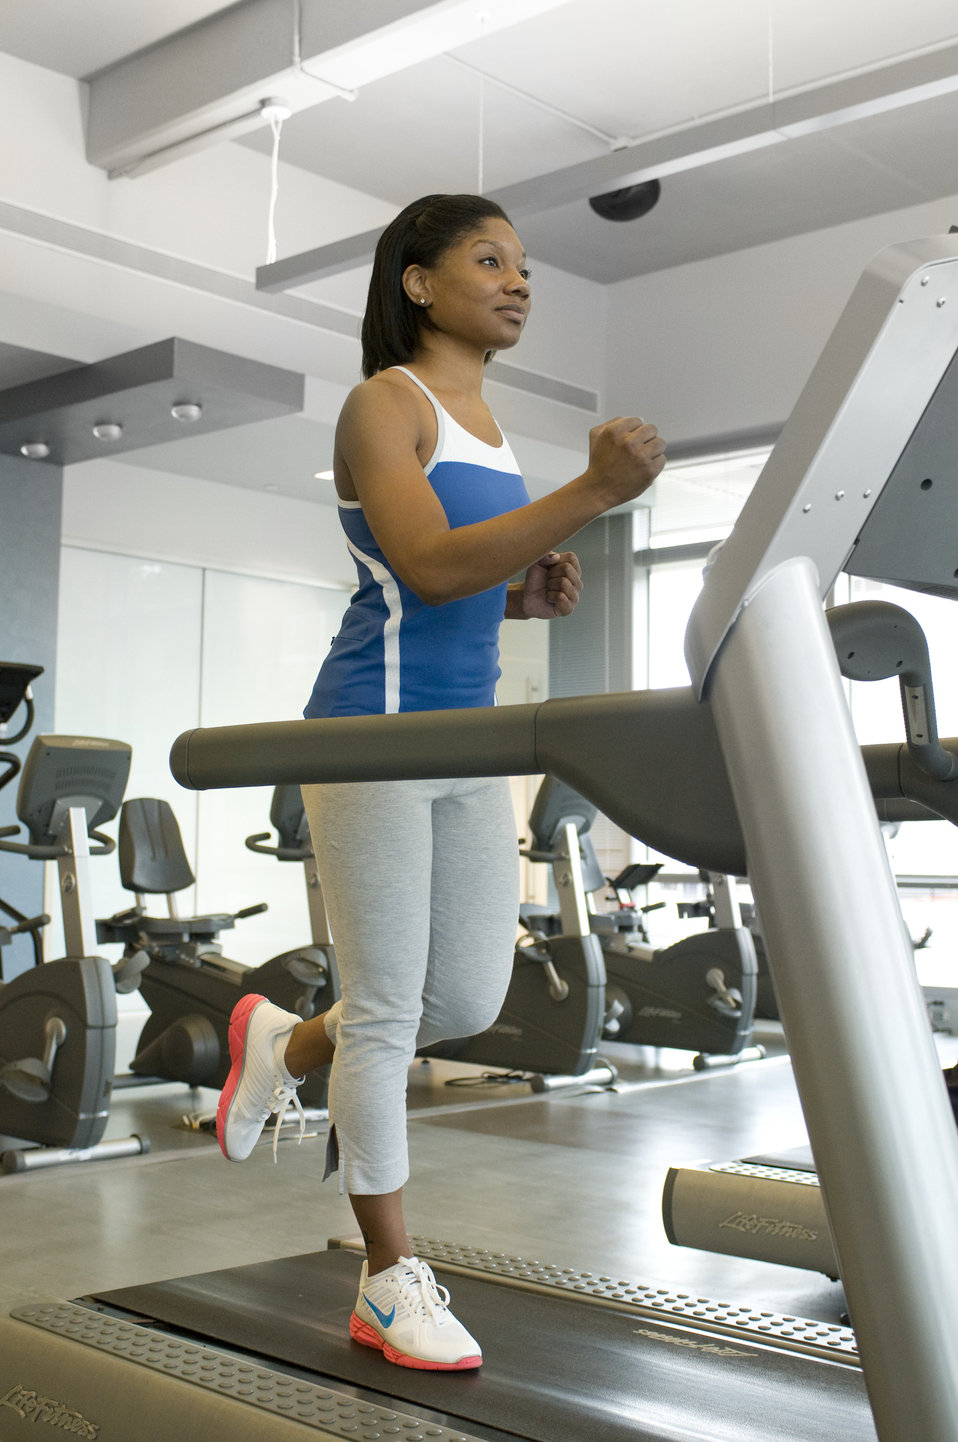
This image was captured on one of the Centers for Disease Control's (CDC) campuses, in the facility's fitness center, where a number of scheduled group classes are provided for employees' health and enjoyment. In this particular view, this woman was making use of a treadmill, taking part in some aerobic exercise.